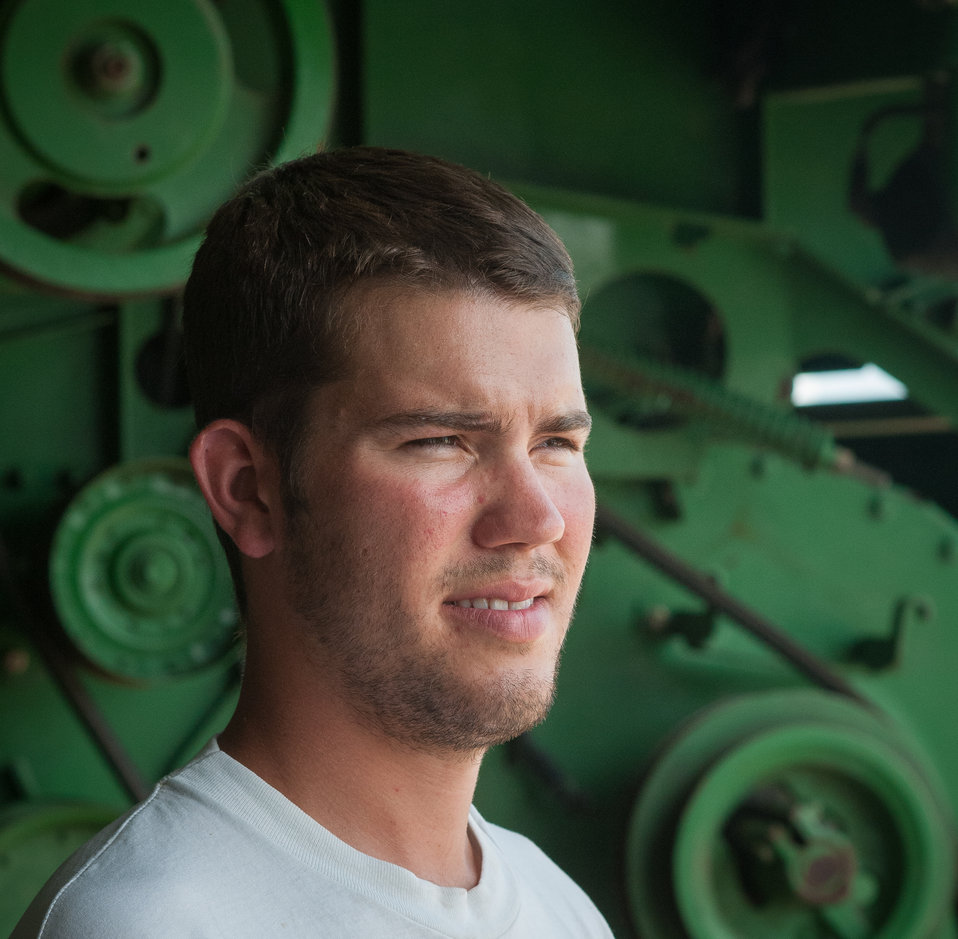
Philip Marek stands in front of a combine in Wharton County, TX on Jun. 20, 2013. Marek has been a farm owner since 2010 and started with 210 acres. “I love farming and seeing the transition from seed to harvest,” professes Mr. Marek. Philip Marek has been a farm owner since 2010 and started with 210 acres. Marek and his cousin Josh Marek were able to use a U.S. Department of Agriculture (USDA) Farm Services Agency (FSA) small and new farmer and rancher loan programs provided them the ability to handle initial business start-up and equipment purchase.